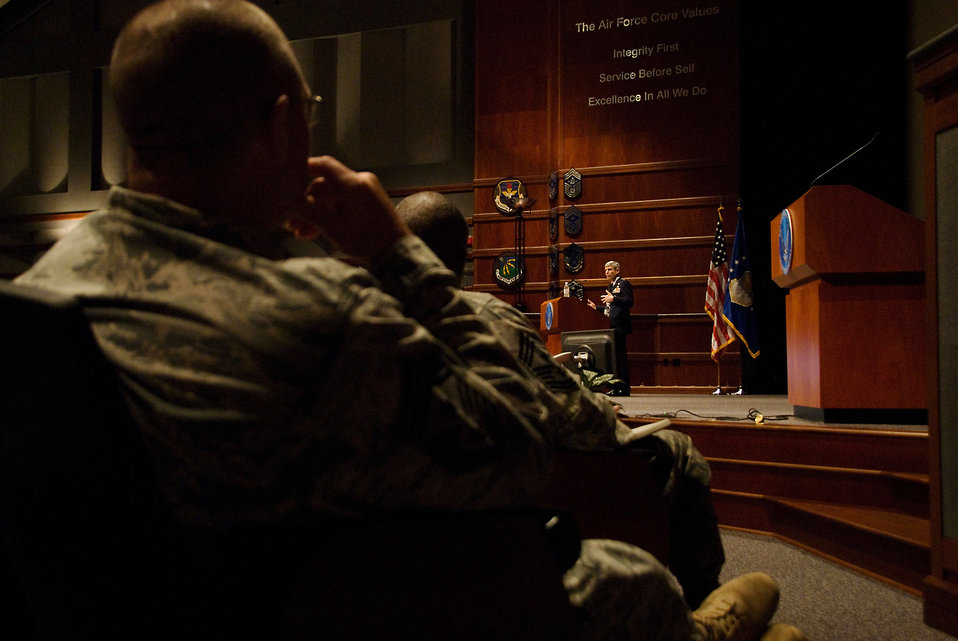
2010 Senior Enlisted Leaders Summit

Air Force Chief of Staff Gen. Norton Schwartz addresses attendees at the Senior Enlisted Leaders Summit at Maxwell Air Force Base, Ala., May 4, 2010 The general encouraged the leaders in attendance to 'deliberately develop' their Airmen. Hosted by Chief Master Sergeant of the Air Force James Roy, the summit brought together approximately 375 Air Force, joint and coalition senior enlisted representatives.